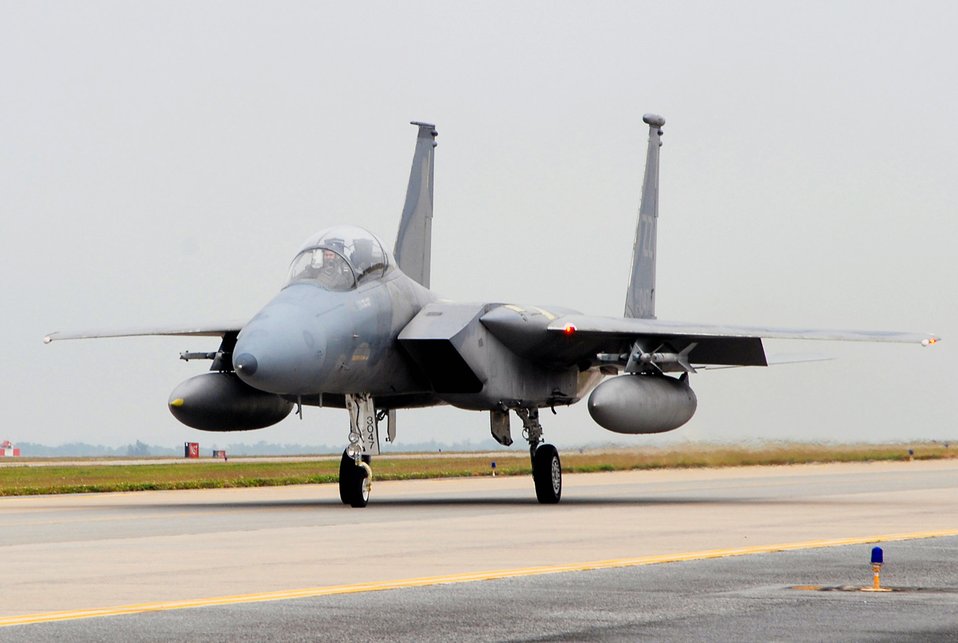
F-15 Eagle taxis

An F-15 Eagle taxis to the runway during a local operational readiness exercise at Kadena Air Base, Japan.